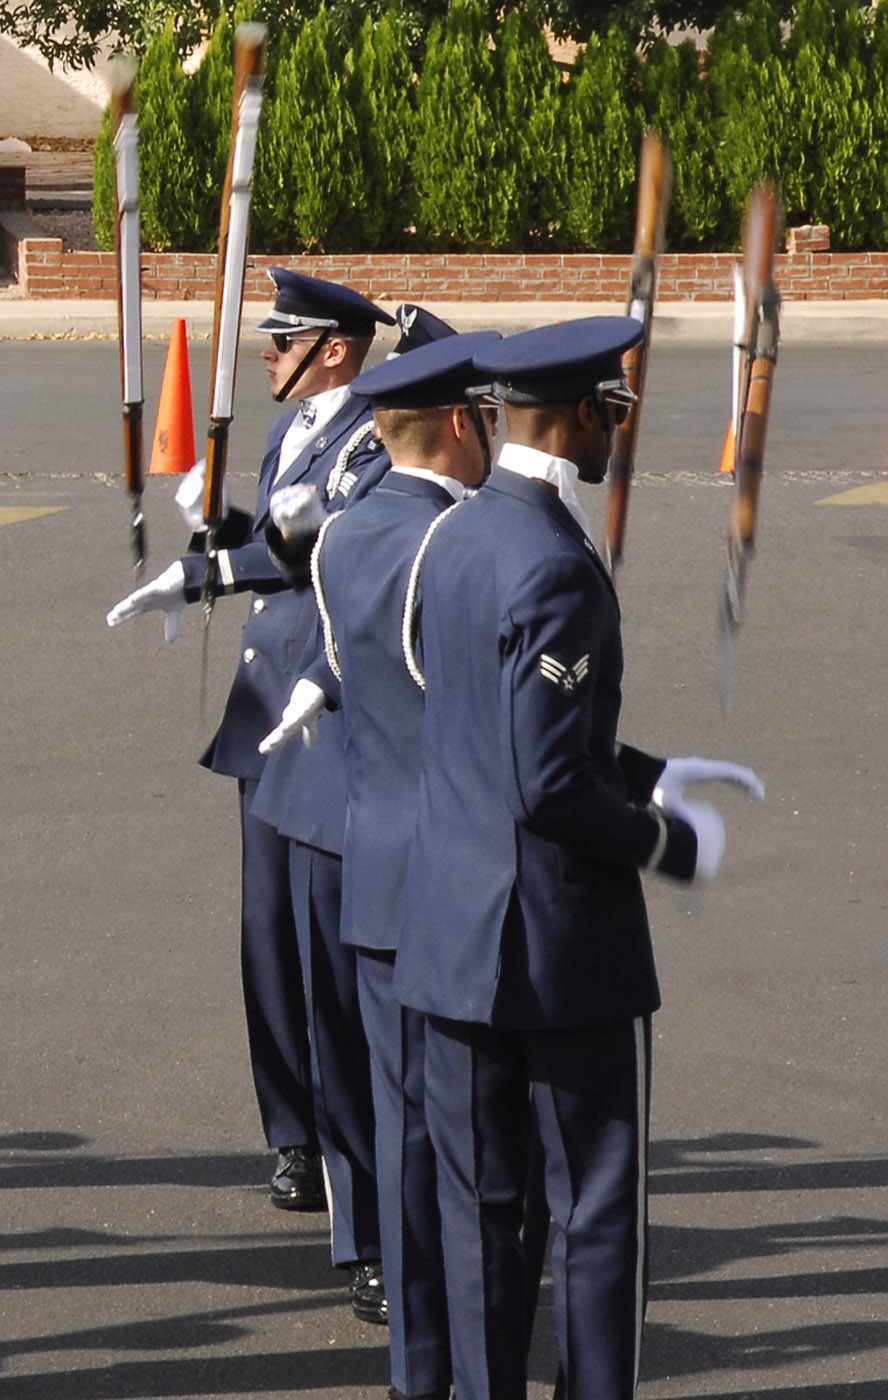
Honor Guard drill team performs for special-needs students

Members of the Air Force Honor Guard drill team perform at the John F. Miller School for Special Needs Nov. 8 in Las Vegas. The drill team planned a special performance for the students at the school during their visit to the city and Nellis Air Force Base, Nev., for the final week of the Air Force's 60th Anniversary celebrations.